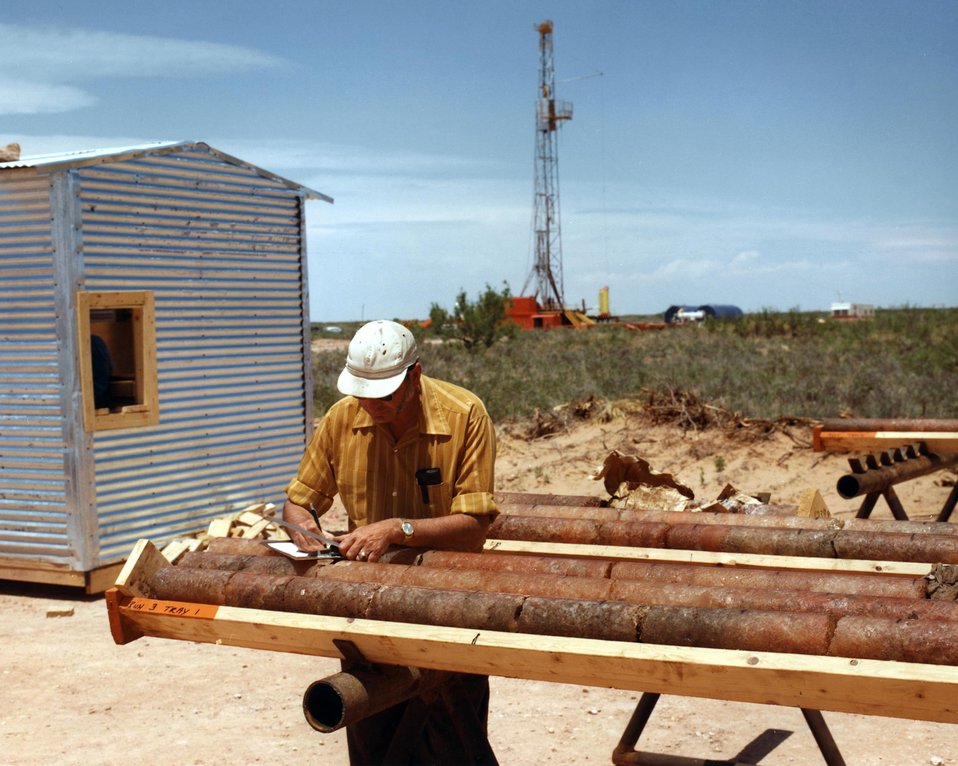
U.S.G.S. GEOLOGIST EXAMINES CORE SAMPLES, TAKING NOTES ON INDIVIDUAL PIECES.

THE WASTE ISOLATION PILOT PLANT IS A DOE RESEARCH AND DEVELOPMENT FACILITY FOR DEMONSTRATING THE SAFE DISPOSAL OF TRANSURANIC RADIOACTIVE WASTES. TEST SHAFTS HAVE BEEN DRILLED TO A DEPTH OF 2,100 FEET. THE SHAFTS, ONE 6 FEET IN DIAMETER AND THE OTHER 12 FEET IN DIAMETER, PROVIDE AN ENTRY PASSAGE AND VENTILATION TO THE UNDERGROUND SALT ROCK FORMATION THAT IS BEING TESTED TO DETERMINE ITS SUITABILITY FOR RADIOACTIVE WASTE STORAGE.